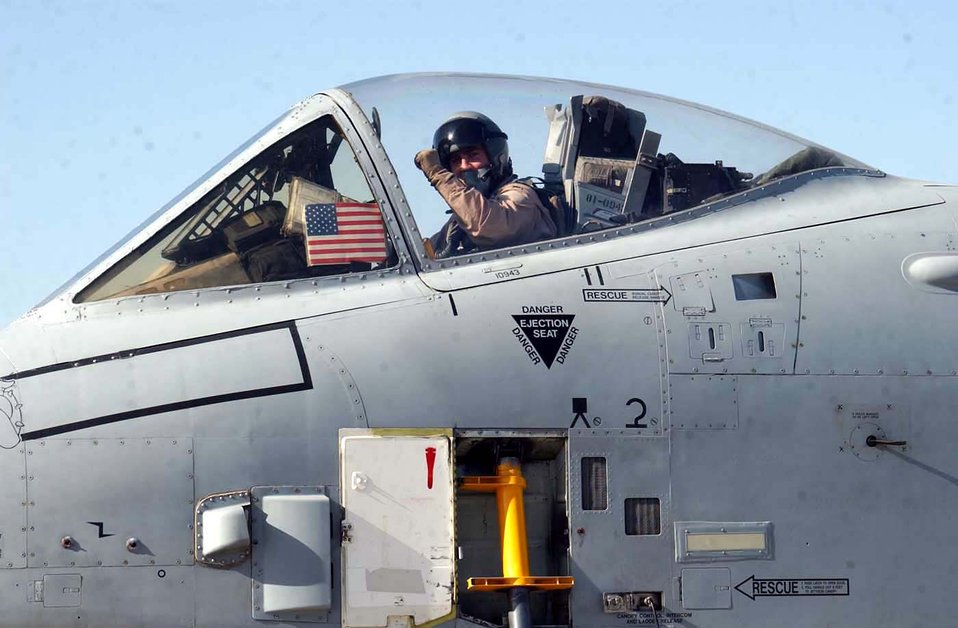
A-10 pilot takes aim on terrorism

BAGRAM AIR BASE, Afghanistan -- First Lt. Michael Stock sits in the cockpit of his A-10 Thunderbolt II before flying a mission supporting Operation Enduring Freedom. Lieutenant Stock is a pilot with the 354th Expeditionary Fighter Squadron and is deployed from Davis-Monthan Air Force Base, Ariz.